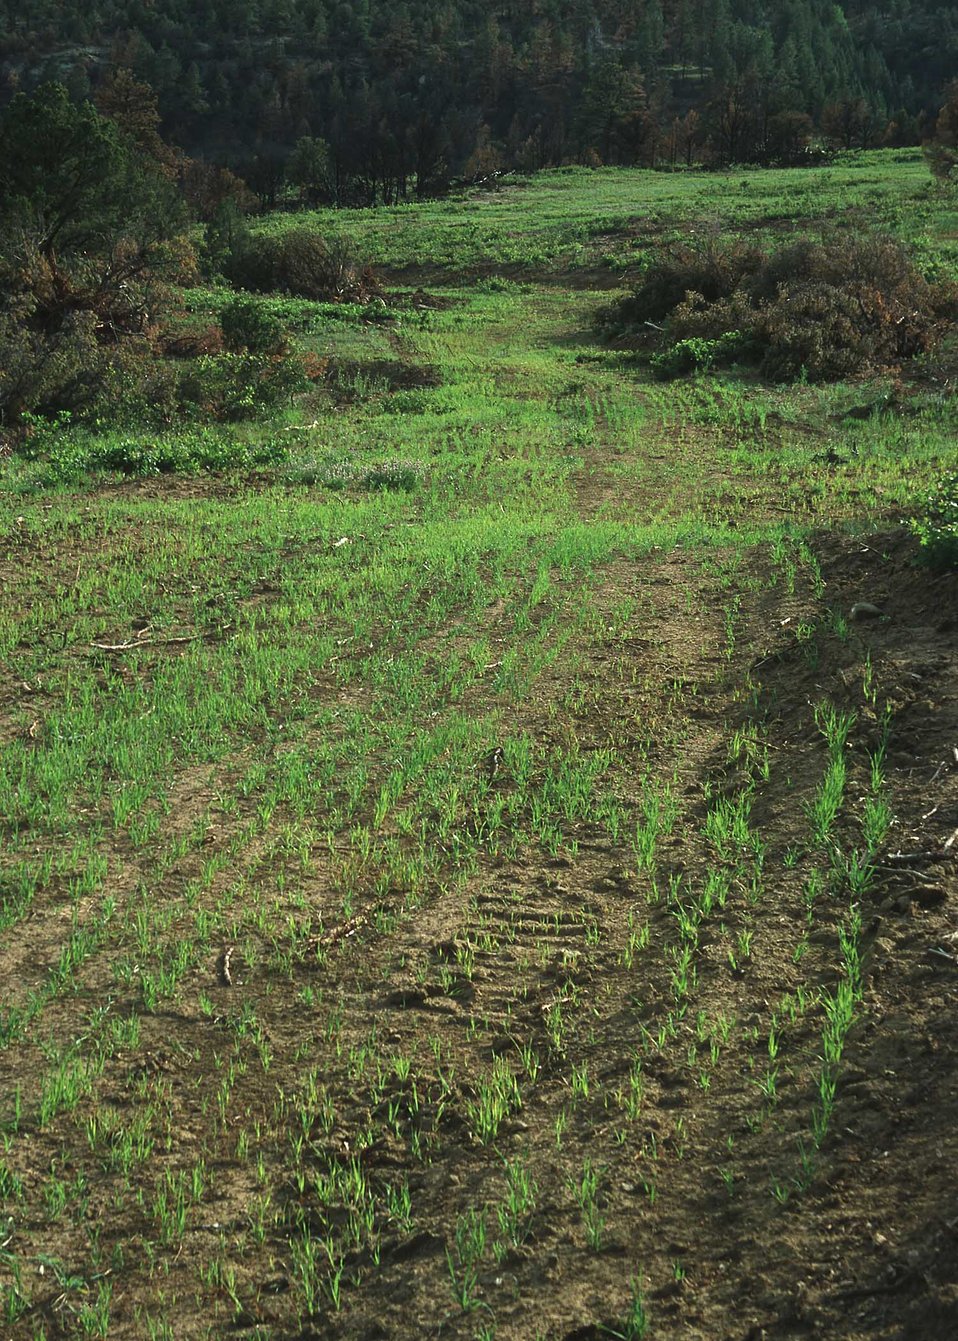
Seeded Access Road near Spanish Peaks, CO.